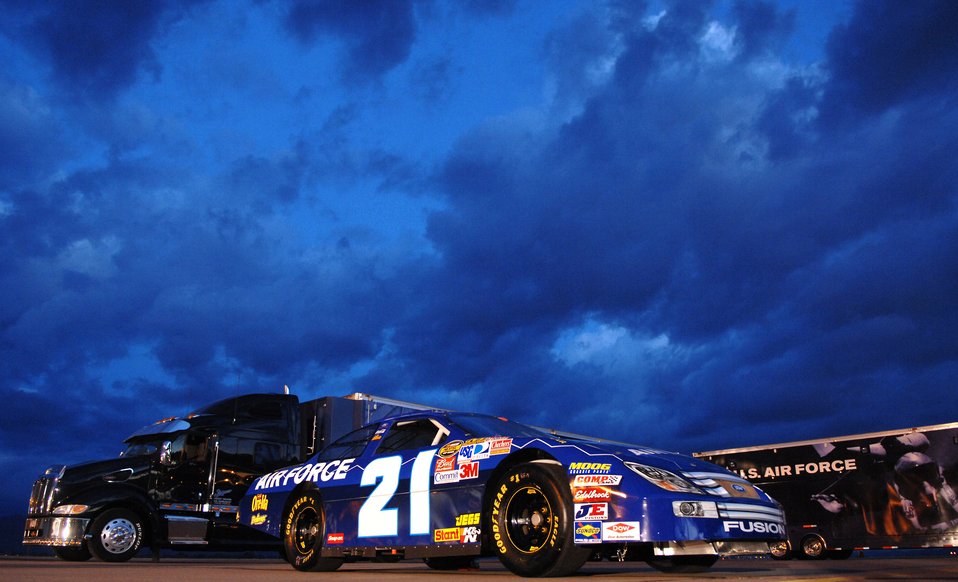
Car show

The Air Force NASCAR show vehicle served as a backdrop March 22 for